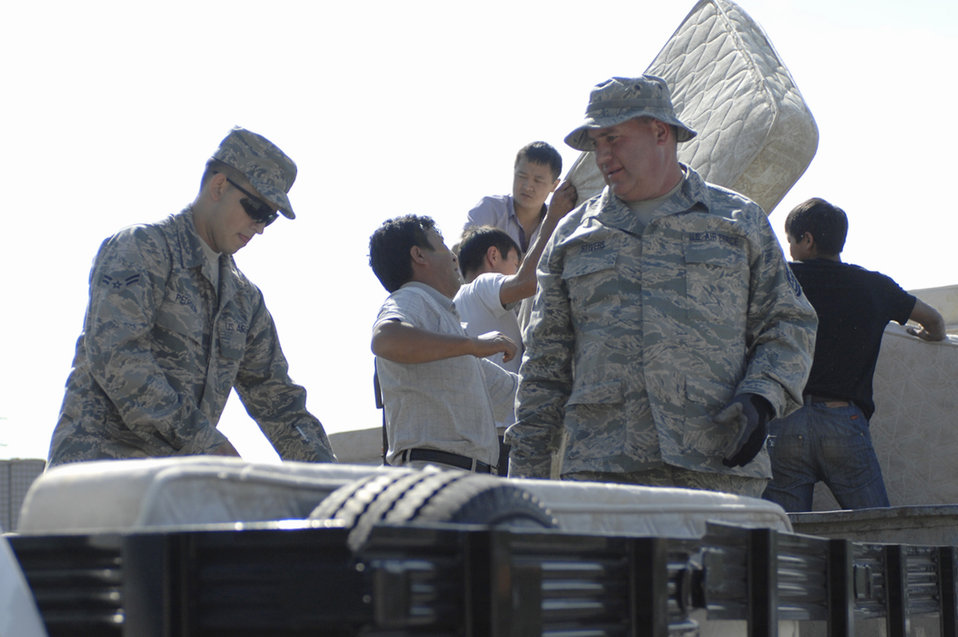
Airmen donate mattresses to help community

Airman 1st Class Javier Pedroza and Master Sgt. Leslie Stivers helps transfer mattresses to a community and humanitarian assistance program at Manas Air Base, Kyrgyzstan, June 10, 2009. A collaborative effort from the base, the U.S. Embassy, the Kyrgyz Embassy, Department of State, Counterpart International Inc. and the Defense Logistics Agency allowed more than 300 mattresses to be donated to six hospitals in nearby capitol of Bishkek. Airman Pedroza is a fitness center quality assurance apprentice assigned to the 376th Expeditionary Force Support Squadron. Sergeant Stivers is an utility team crew chief with the 376th Expeditionary Force Support Squadron.